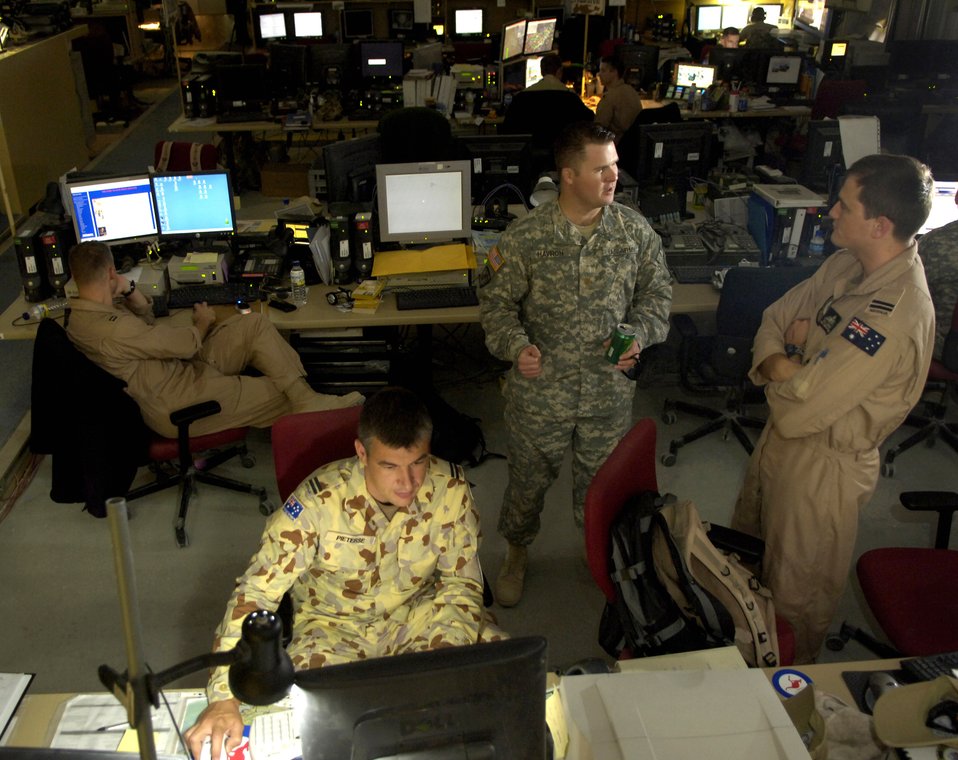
Command and control a 24/7 operation

Flight Lt. Herman Pieterse works at his computer as Army Maj. Brandon Havron discusses battlefield coordination with Flight Lt. Ben Miedecke on Thursday, June 1, 2006, at the Combined Air Operations Center in Southwest Asia. The lieutenants are liaison officers for the Royal Australian Air Force; Major Havron is with the battlefield coordination detachment at the CAOC.